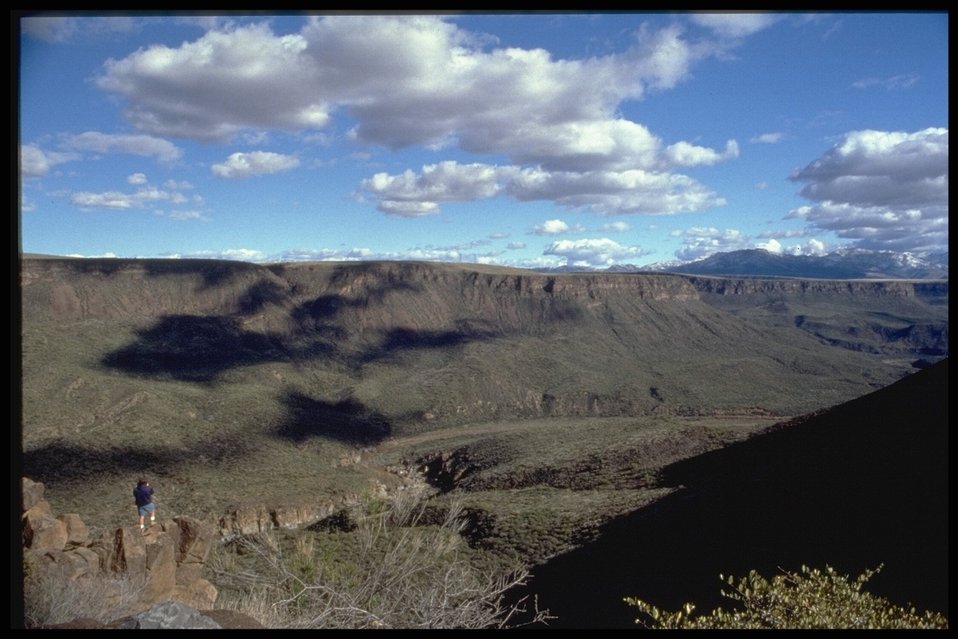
The Agua Fria Canyon below a cloud peppered Arizona sky.